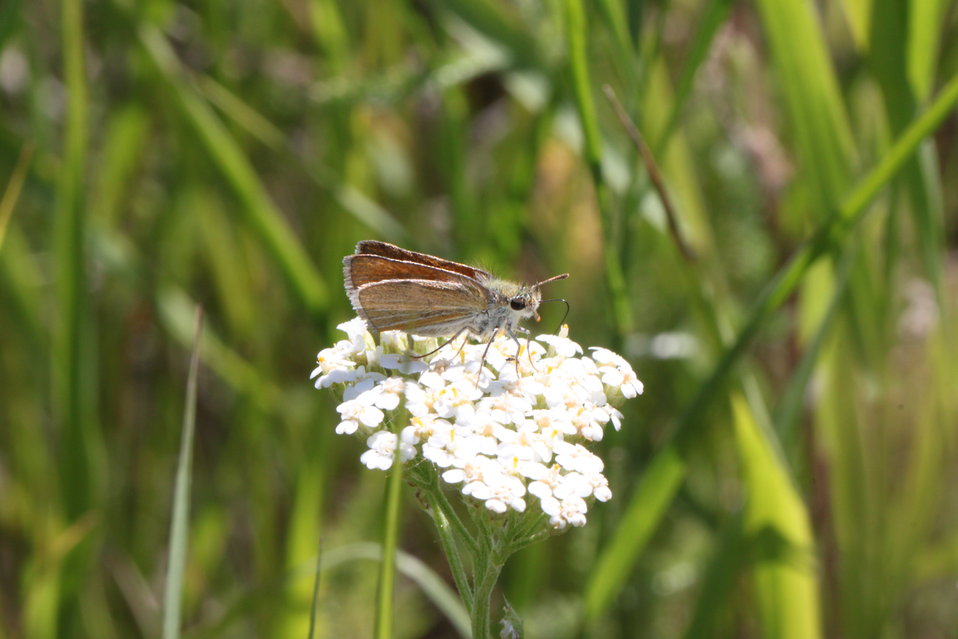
Garita Skipperling

Oarisma garita is a commonly found Skipper in Refuge grasslands.